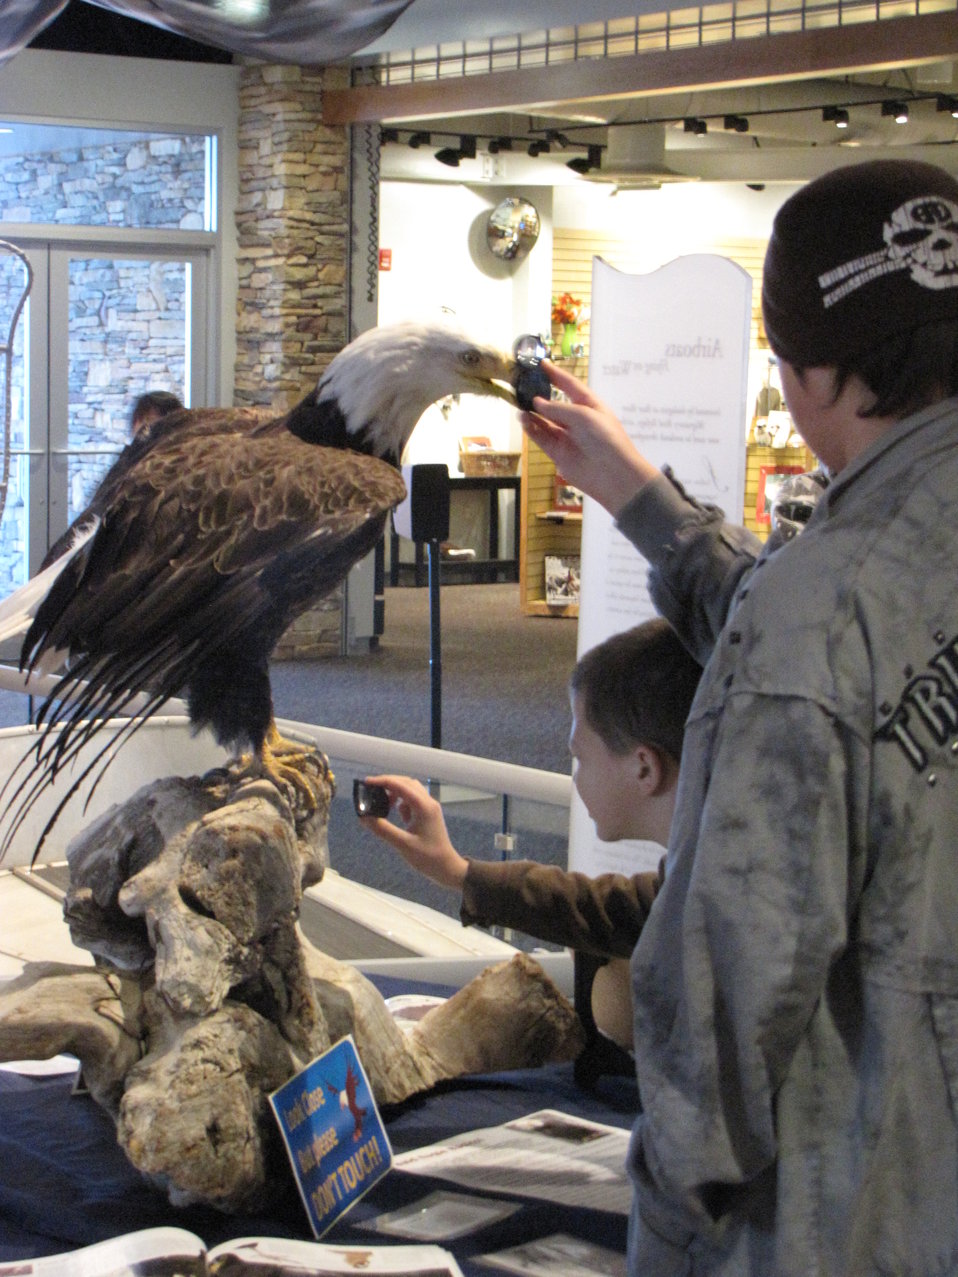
Investigating an Eagle

Getting an up close and personal look at an eagle mount, these young visitors learned about talons, beaks, feathers and more during Bald Eagle Day, Feb. 12, 2011, at Bear River Migratory Bird Refuge in Utah.